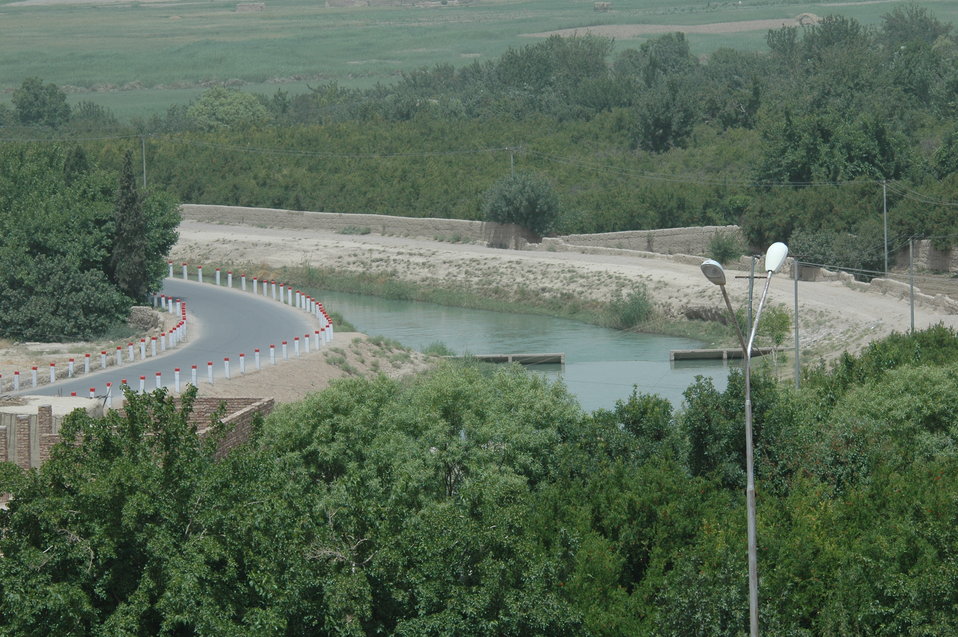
CODEL Berman